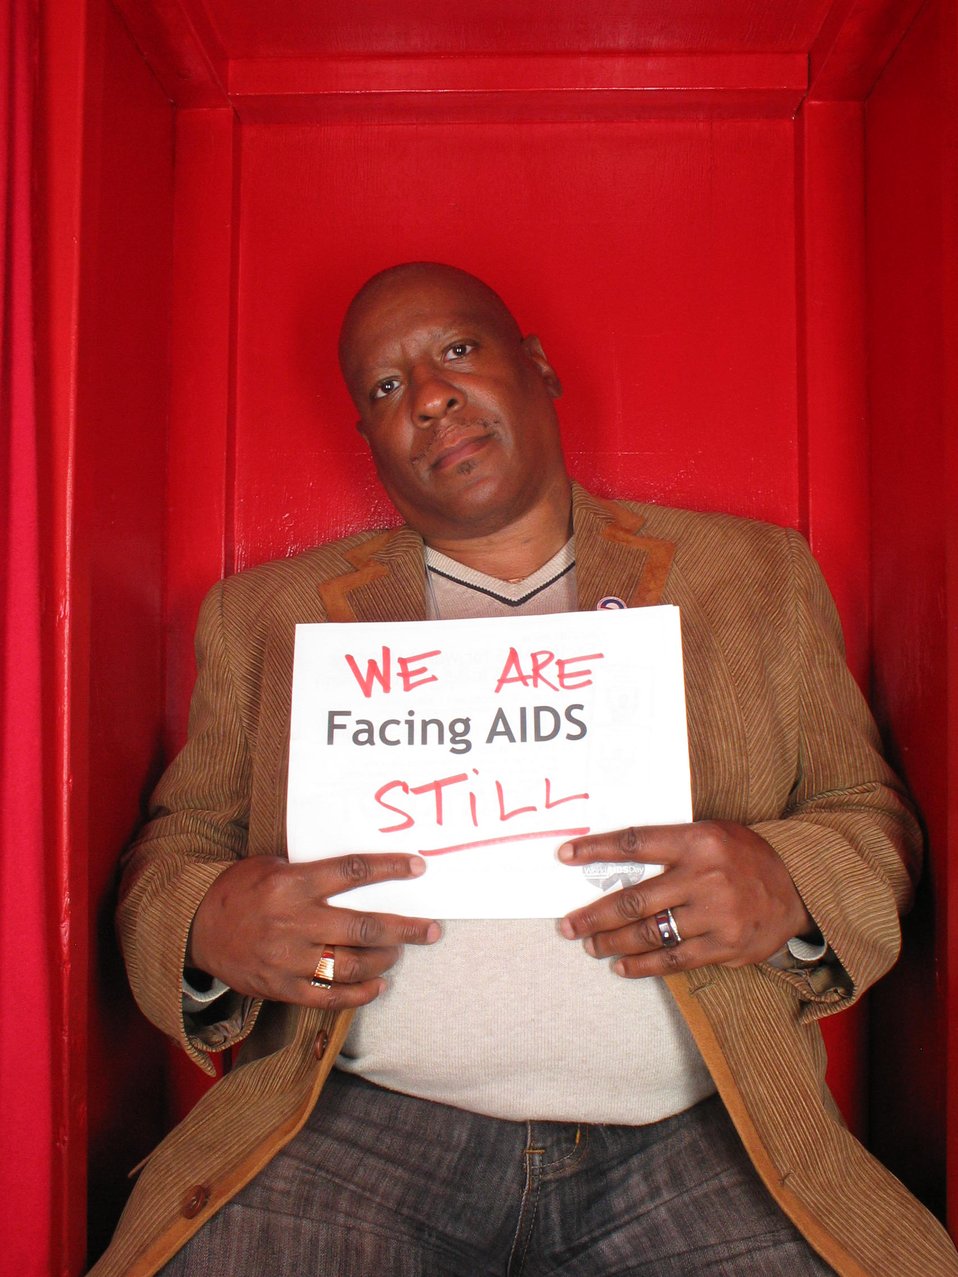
We are Facing AIDS still